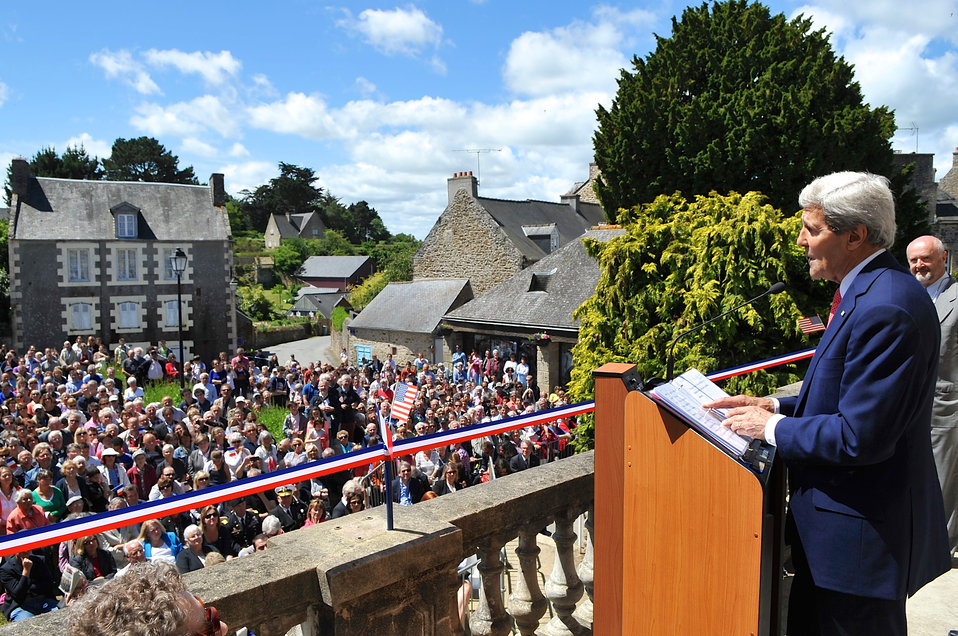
Secretary Kerry Salutes U.S.-French Alliance During Speech in Saint Briac

U.S. Secretary of State John Kerry salutes the endurance of the U.S.-French alliance during a speech in Saint Briac, France, June 7, 2014.